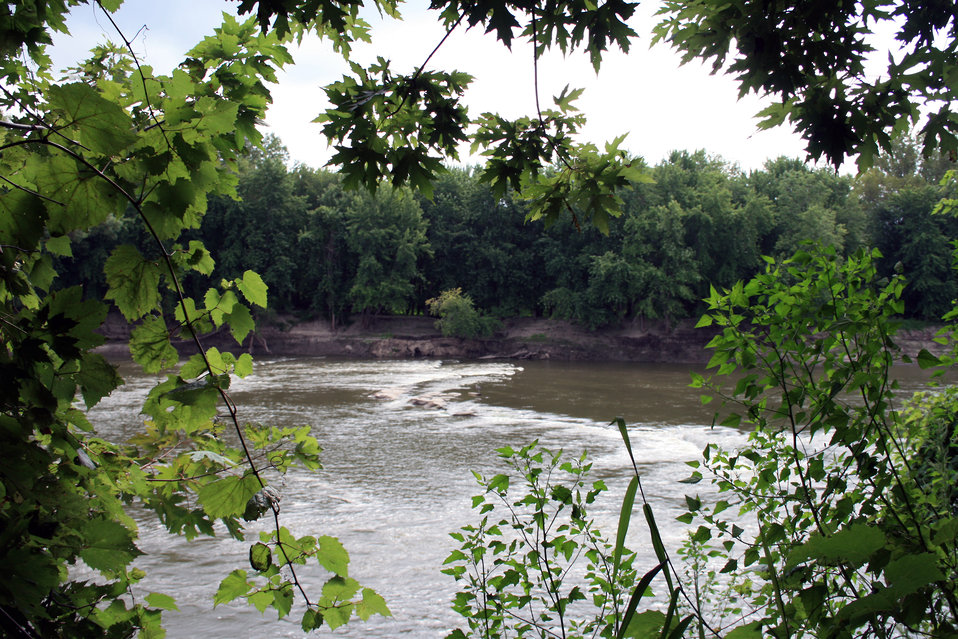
Minnesota River

Floodplain forests historically dominated much of the floodplain along the Minnesota River. Today, this plant community continues to provide migration and nesting habitat for several significant birds that are a priority for the U.S. Fish and Wildlife Service. These include the red-headed woodpecker, red-shouldered hawk and wood duck. Minnesota Valley National Wildlife Refuge monitors and restores the forest community to include cottonwood, sliver maple, American elm, green ash, and wood nettle.